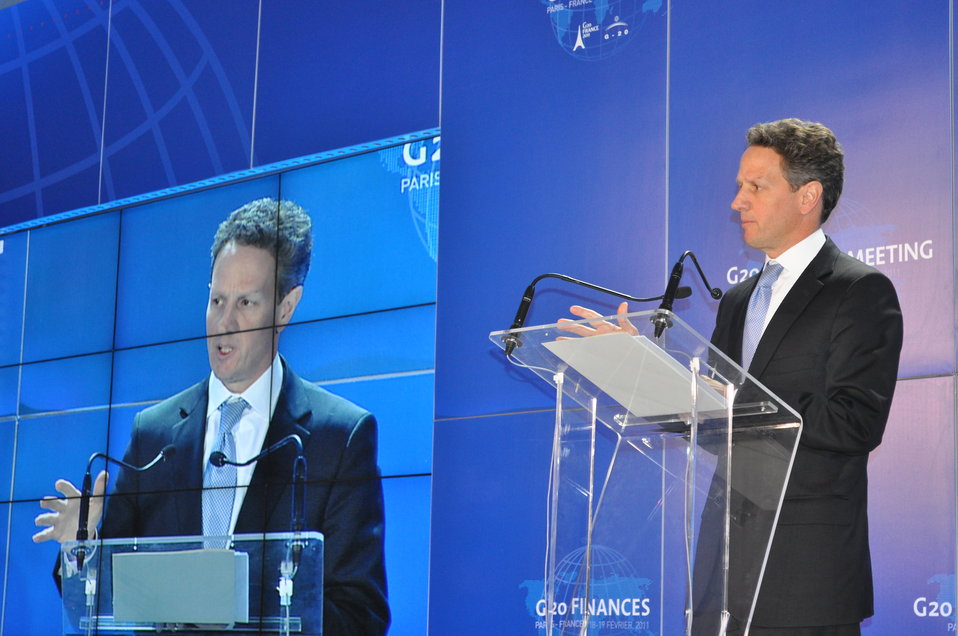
G-20 Meeting of Finance Ministers and Central Bank Governors in Paris, 02/19/2011

Secretary Geithner speaking at a press conference at the conclusion of the G-20 Meeting of Finance Ministers and Central Bank Governors held in Paris, France.